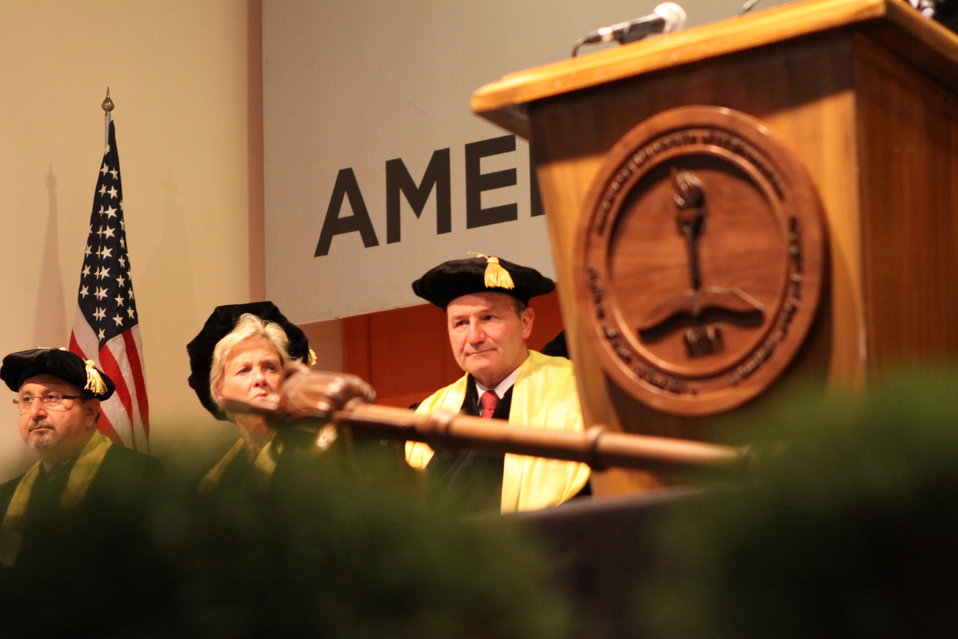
100526 AUAF Graduation 166